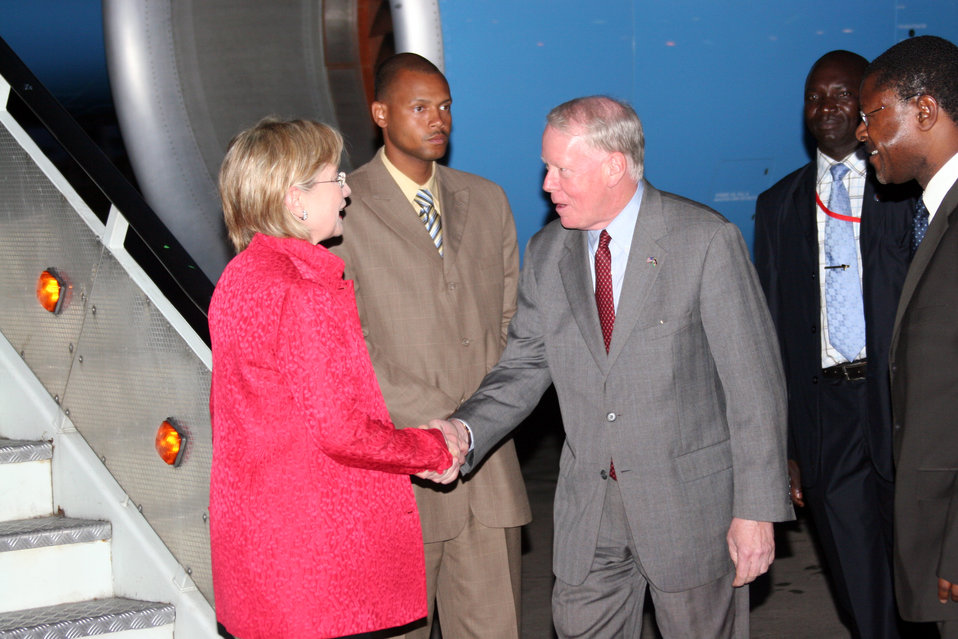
Secretary Clinton Arrives in Nairobi, Kenya

U.S. Secretary of State Hillary Rodham Clinton is greeted by U.S. Ambassador to Kenya Michael E. Ranneberger during her arrival at Jomo Kenyatta International Airport in Nairobi, Kenya August 4, 2009.